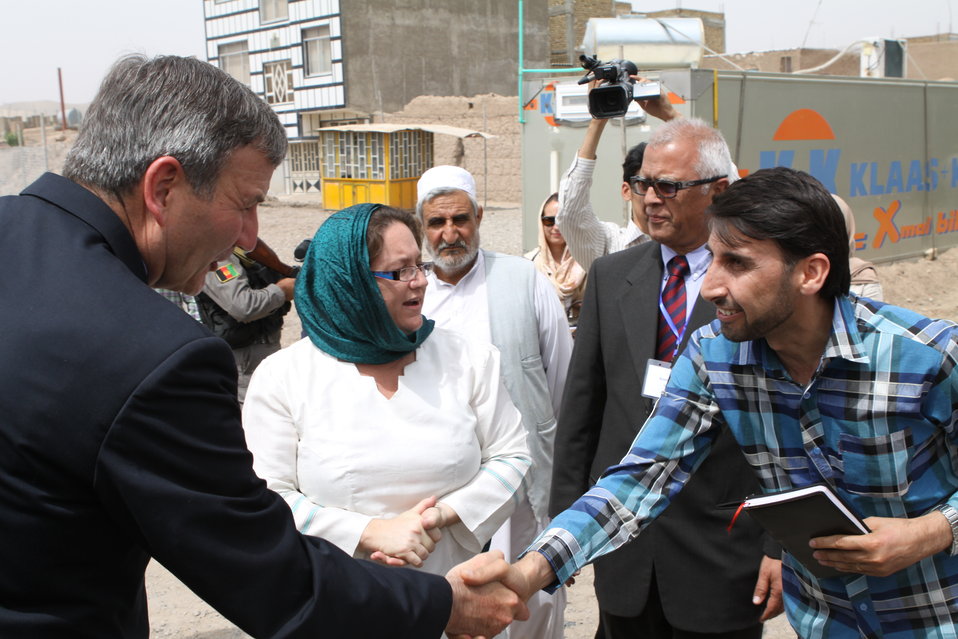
100525 Hirat Marble Conference 601